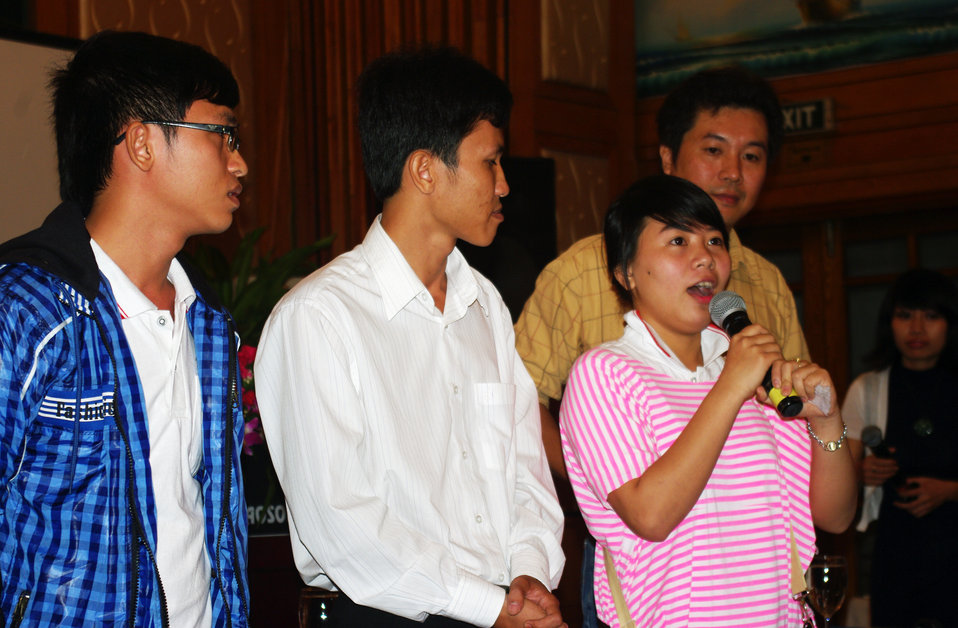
USAID Supports HIV Awareness among Street Youth and Young Men

Trainers and peer educators tell their stories on November 29, 2011, in Hanoi, Vietnam